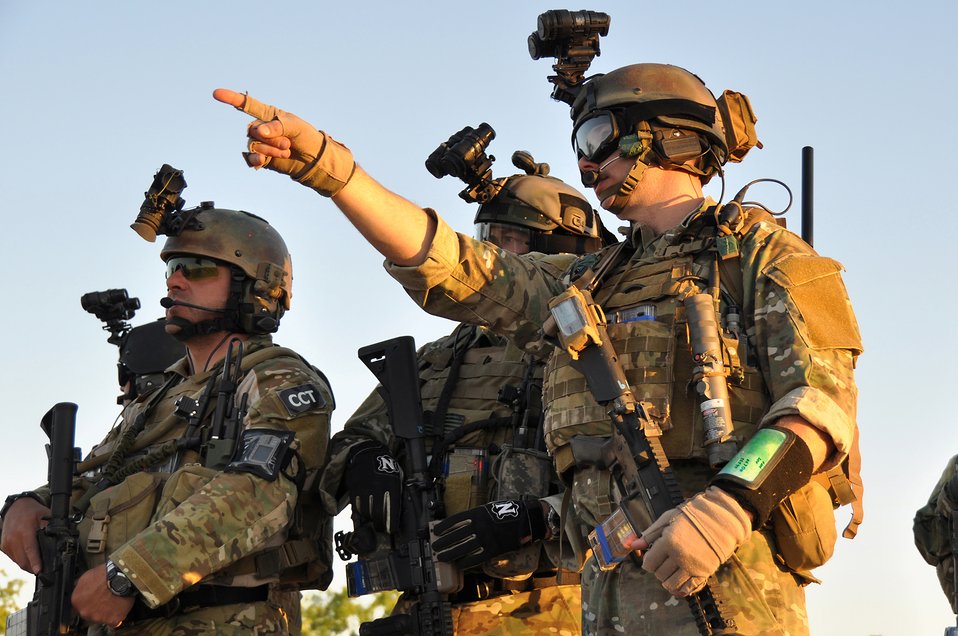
Battlefield Airmen considered a weapon system

Air Guard battlefield Airmen try out new equipment at the Air National Guard and Air Force Reserve Command Test Center, Ariz., in May 2009. Battlefield Airmen held several weapon system working groups Oct. 19 to 23, 2009, as part of the annual Air Guard and Air Force Reserve Weapons and Tactics Conference.